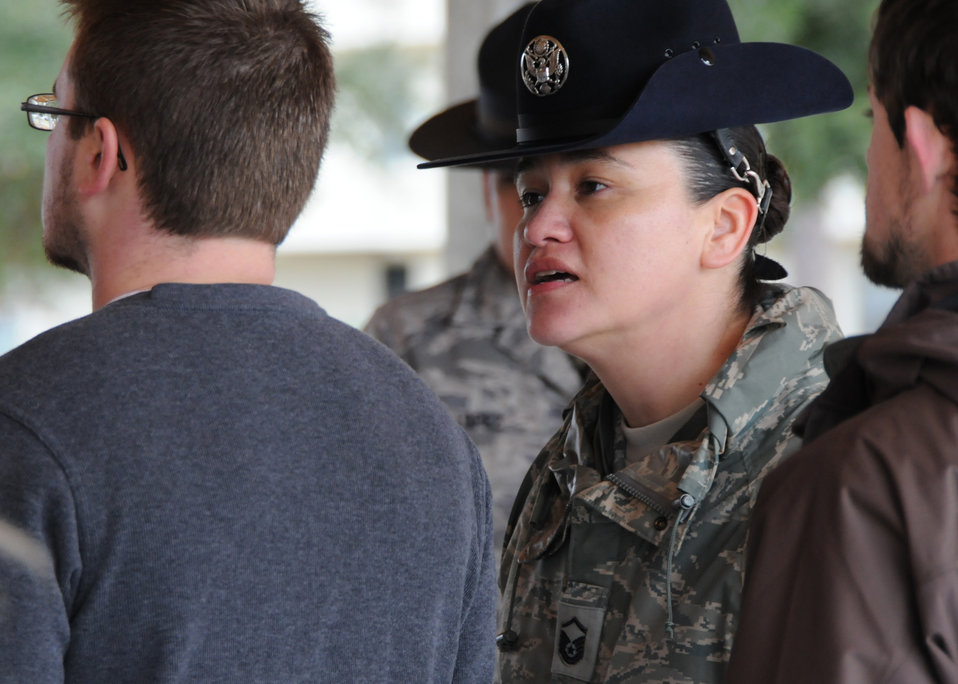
Former BMT instructors give new Reserve recruits glimpse at 'Basic'

Master Sgt. Tiffany Lopez corrects a new Air Force Reserve recruit Feb. 6, 2010, at Duke Field, Fla. Sergeant Lopez and her husband, Tech. Sgt. Raul Lopez, both former active-duty military training instructors at Lackland Air Force Base, Texas, volunteered their time to help new reserve recruits prepare for basic training during the drill weekend here. The husband and wife team spent four years instructing new trainees at Lackland graduating 25 flights from Basic Military Training. Sergeant Tiffany Lopez is assigned to the 96th Force Support Squadron. Sergeant Raul Lopez is assigned to the 96th Logistics Readiness Squadron.